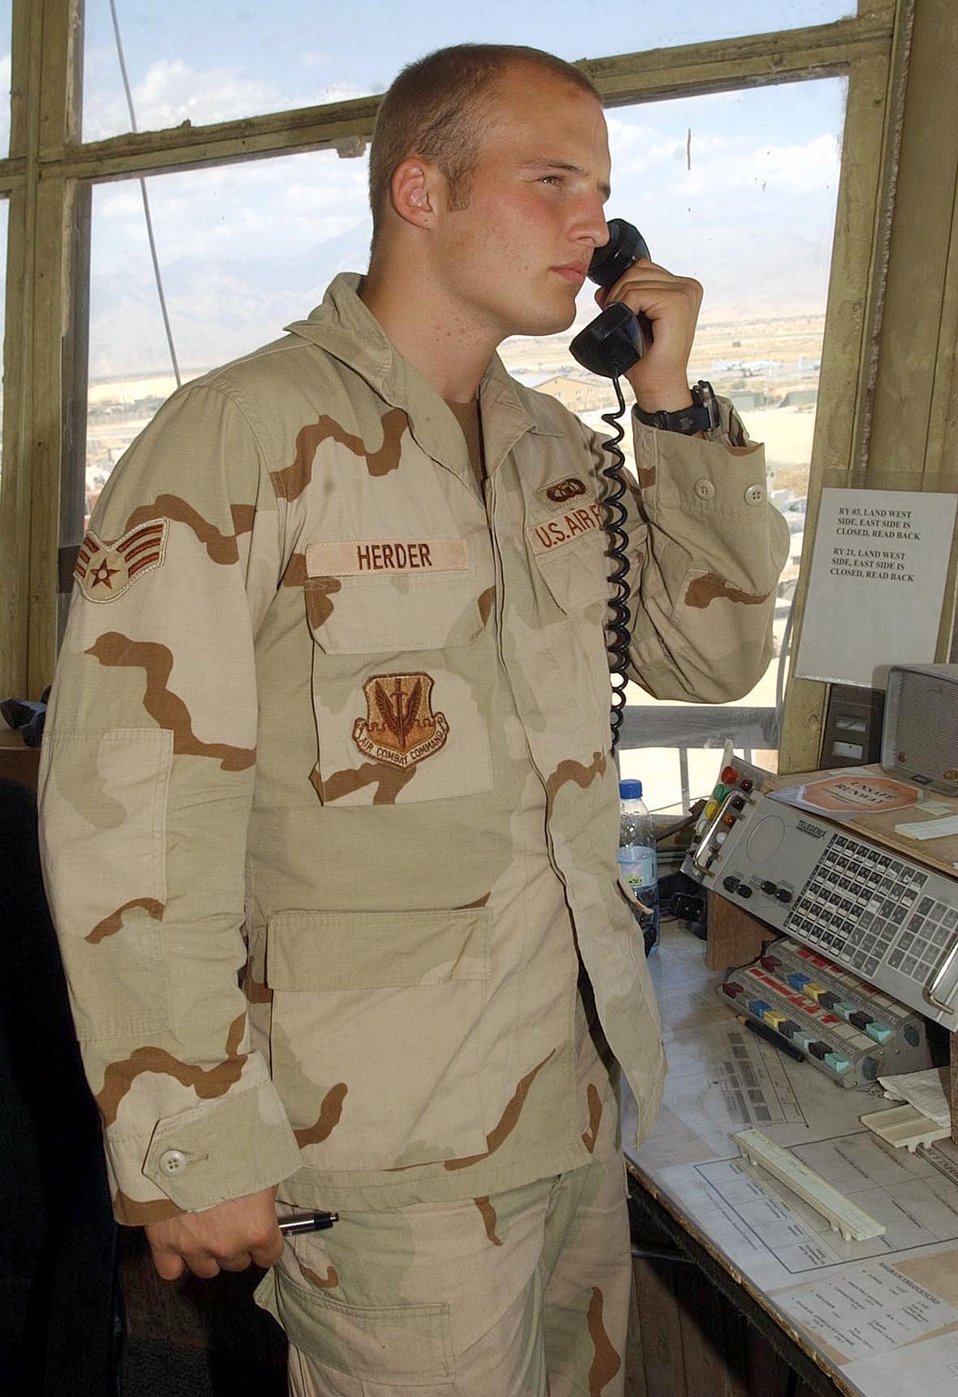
Two of two

BAGRAM AIR BASE, Afghanistan - Senior Airman Jason Herder, 455th Expeditonary Operations Group, talks an aircraft in for a landing on the runway here Aug. 13.